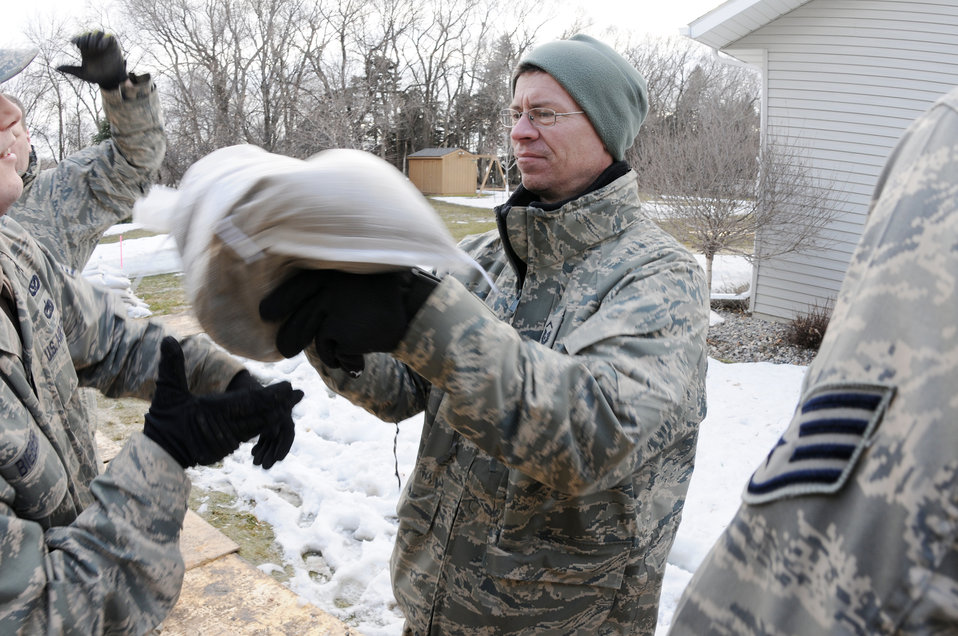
Fighting rising water in Fargo

Master Sgt. Lee Gunderson passes a sandbag along a line of flood fighting people from the North Dakota Air National Guard intermixed with civilian volunteers March 16, 2010, in an effort to build a flood barrier to the rising water of the Red River in Fargo, N.D.